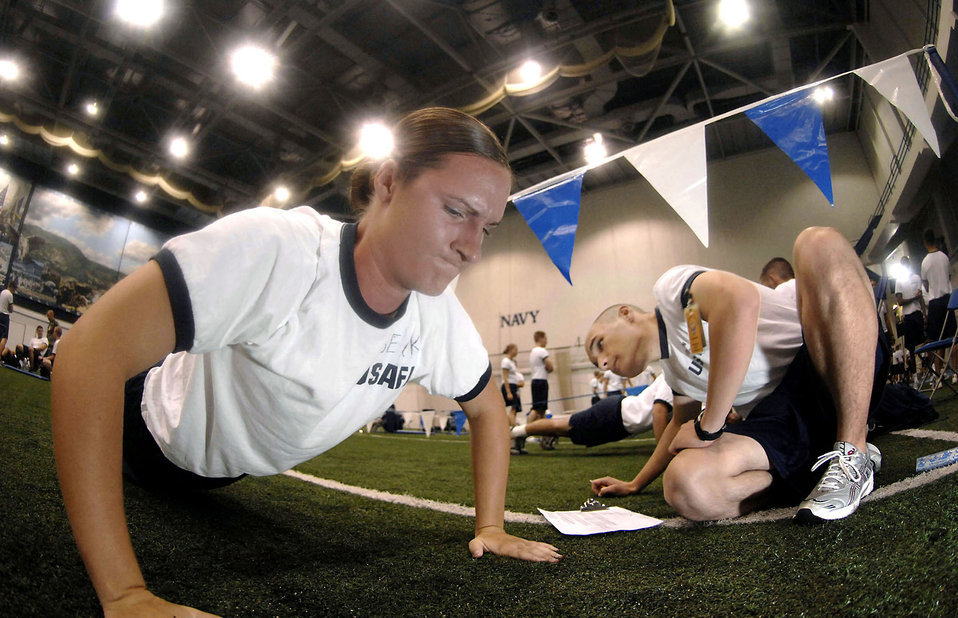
Just a couple more?

Cadet 4th Class Raimee Beck strains to get as many push-ups as possible while Cadet 2nd Class Devin Bordelon ensures proper form during her physical fitness test at the U.S. Air Force Academy, Colo. Females need 48 pushups to receive maximum points for the that portion of the test.